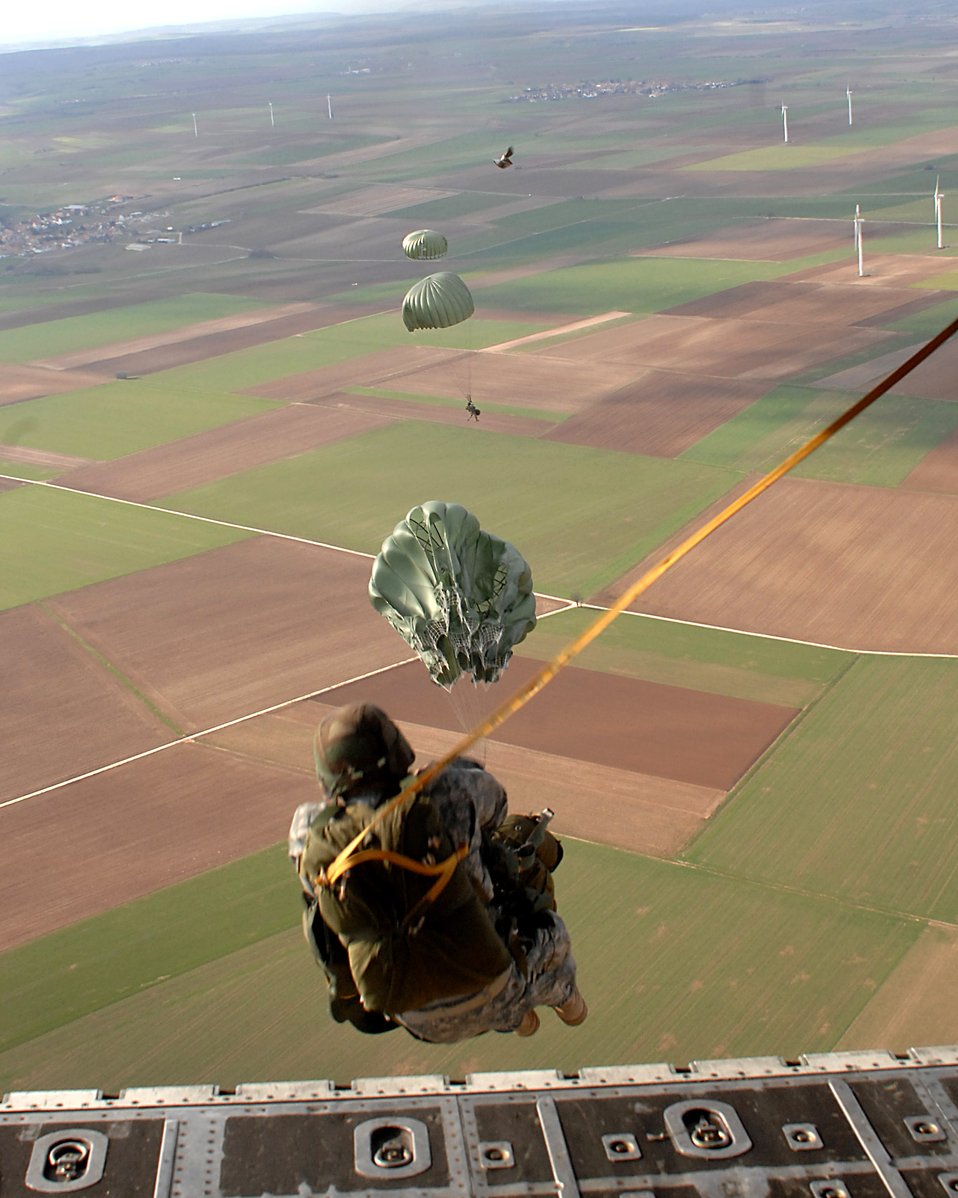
Airborne over Deutschland

Airmen of the 786th Security Forces Ravens from Sembach Annex, Germany and Soldiers from the 5th Quarter Master Arial Delivery crew execute an airborne jump exercise March 7 over southwestern Germany.